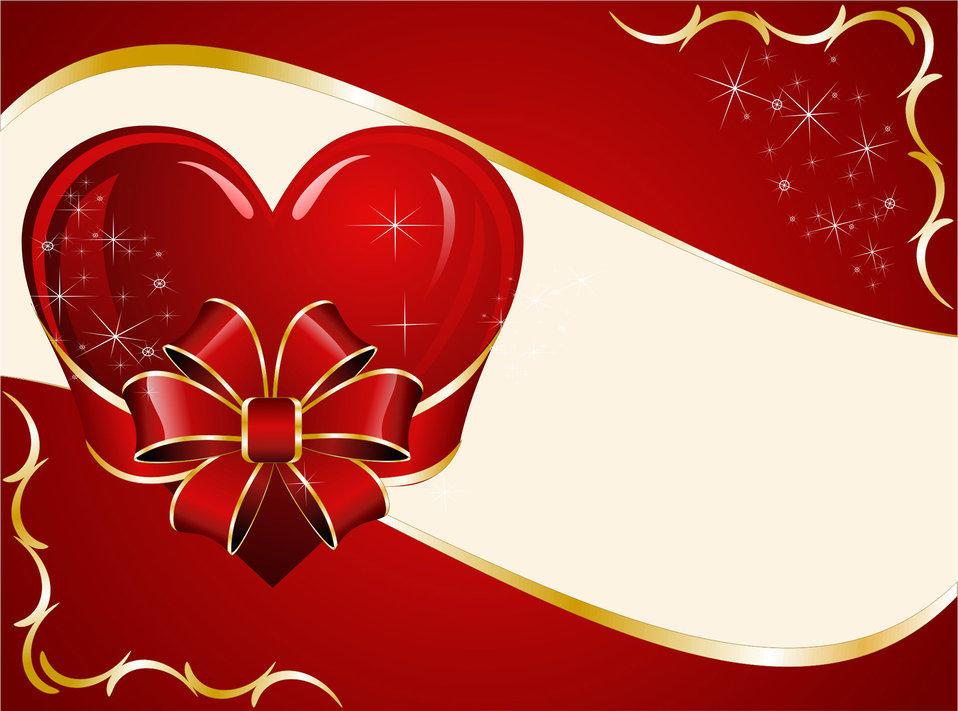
Heart as a gift

Red abstract background with hearts and gold lines and bow..